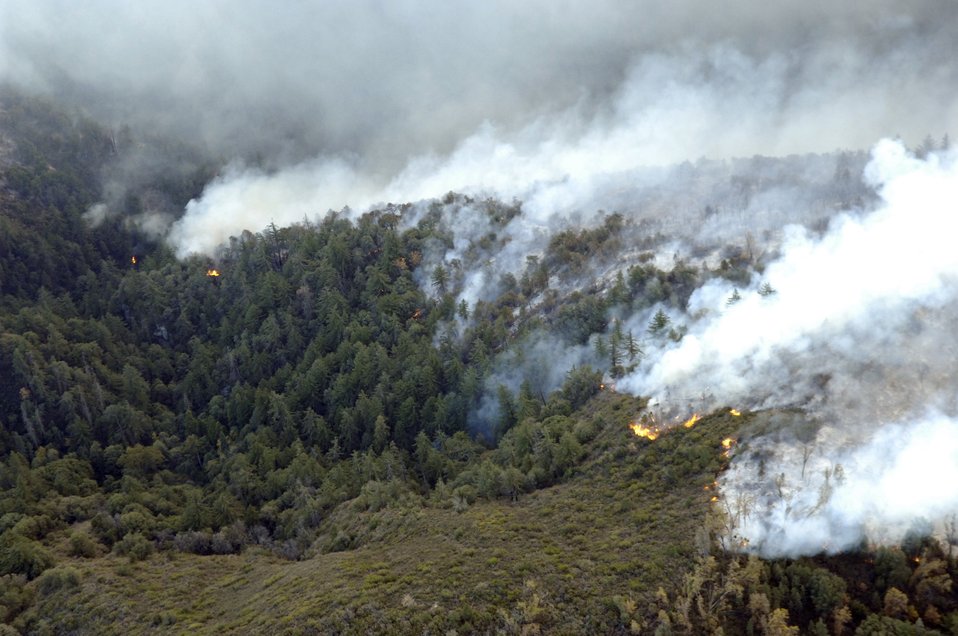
C-130s fight California wildfires

The Poomacha fire burns Oct. 24 in North San Diego County, Calif. C-130 Hercules aircraft launched from Channel Islands Air National Guard Station, Calif., are participating in the Southern California firefighting effort. Air Force Reserve Command officials sent two of its designated firefighting C-130H3 aircraft to help battle the raging wildfires in Southern California.